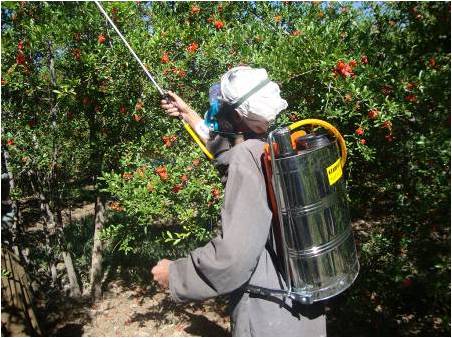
Fight the Tiny Foe

CHALLENGE The famous Kandahari orchards in times of peace boast Kismish and Ayta grapes, apricots, figs, almonds, and the most illustrious of them all – pomegranates, whose succulent fruit has been a long standing emblem of this region. Orchards are vulnerable to the vicissitudes of war: trees that have taken years or decades to develop may be destroyed in an instant. However, not all enemies of the trees are human: insects can be more dangerous to a tree than a thousand bullets.
In March 2010, Kandahar was overrun by an infestation of aphids, small plant-eating insects which are among the most destructive tree-killing pests in this area. Farmers and shura members approached USAID’s Afghanistan Vouchers for Increased Production in Agricul-ture Plus program to seek assistance with the rising aphid blight, which, if left unchecked, would have severely damaged at least one third of Kandahar’s orchards, delivering a severe blow to the livelih-oods of thousands of struggling farmers.
INITIATIVE In consultation with the farming community, the Kanda-har Directorate of Agriculture, Irrigation and Livestock (DAIL) and the Agricultural Department of Kandahar University, AVIPA Plus devel-oped and started rapidly implementing a complete custom-made Inte-grated Pest Management (IPM) project. A simple but efficient eco-friendly solution of soap and water was prepared and tested which, when applied properly, also decreases the presence of two other lo-cal pests - thrips and whiteflies.
By mid-April, the IPM project was expanded to the orchards around the city of Kandahar and in the districts of Zhari and Panjwayi.
RESULTS To date, 6,000 workers have sprayed 8,500 hectares of the Kandahari orchards since March 2010. The workers are all local villagers, many of whom own and earn a livelihood from the very orc-hards they are now protecting from the pests.
In addition, AVIPA Plus will train, equip, and supply a DAIL-sponsored hundred-member team to pass on the know-how to local governmental representatives and thus ensure the sustainability of the initiative.
Under the IPM project, the laborers earn good money and the orchard owners will save their fruit crops this season.
Not all foes are human - obliterating the livelihood of the farmers can be as destructive as the effects of war. USAID/AVIPA Plus continues to work with the farmers of Afghanistan to strengthen their peaceful livelihoods.